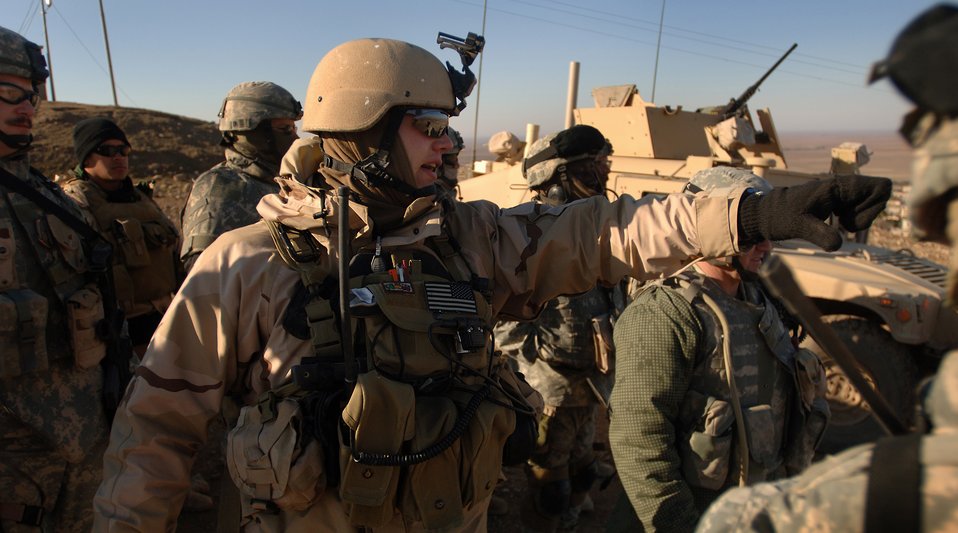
Close-air-support

SOUTHWEST ASIA -- Staff Sgt. Curtis Krenzke teaches Soldiers on the use of close-air support here Jan. 21. Sergeant Krenzke is an Air Force tactical air controller assigned to the 2nd Battalion, 3rd Armored Combat Regiment.